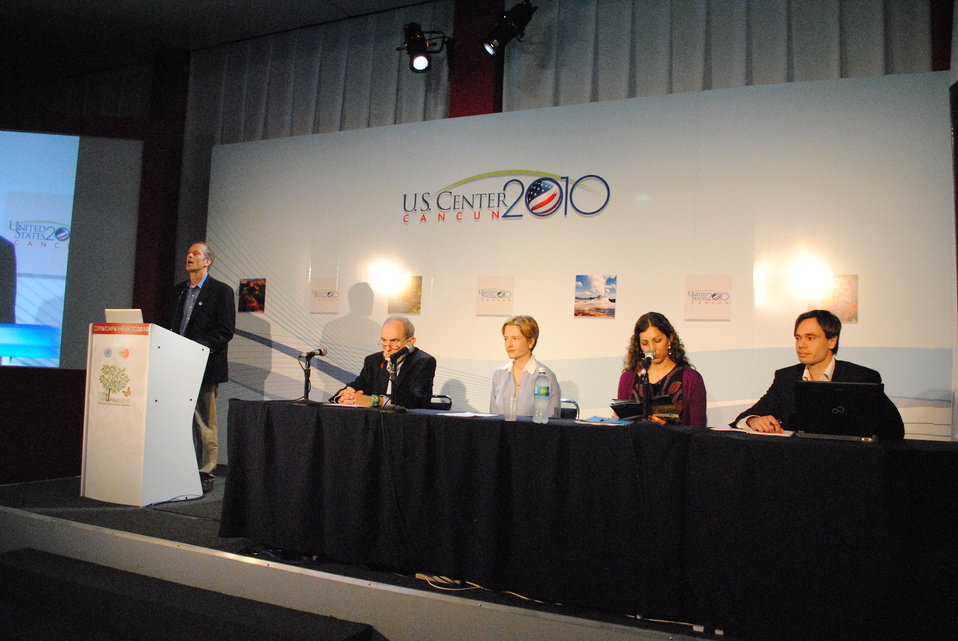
David Herring Introduces the 'OpenEI Platform' Panel

David Herring of NOAA introduces the 'OpenEI Platform' panel, one of the side events at the U.S. Center at COP-16 in Cancun, Mexico, on December 1, 2010.